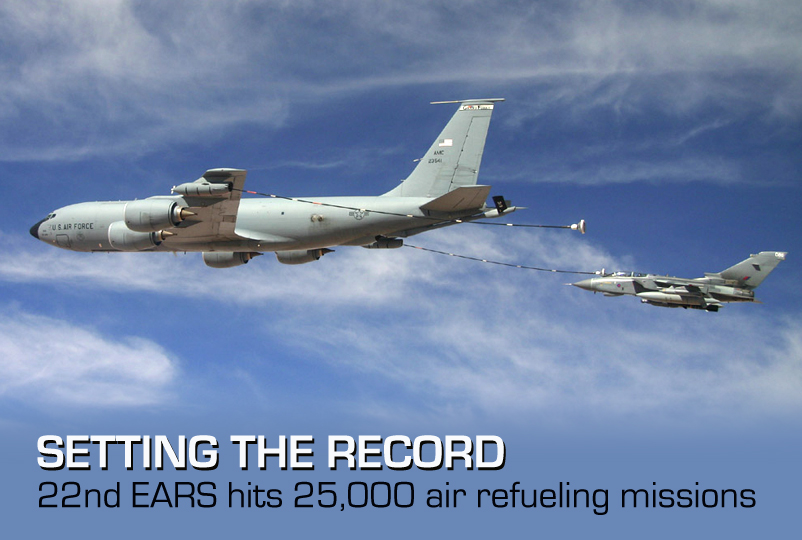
Setting the record